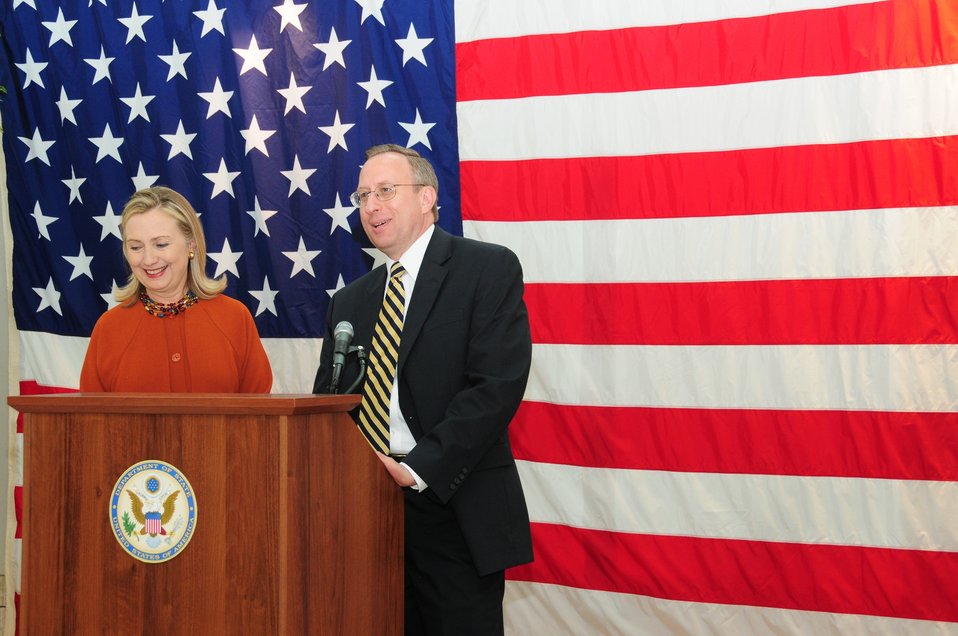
Ambassador Krol Introduces Secretary Clinton

U.S. Ambassador to Uzbekistan George Krol introduces U.S. Secretary of State Hillary Rodham Clinton to Embassy Tashkent staff and families in Tashkent, Uzbekistan, on October 23, 2011.